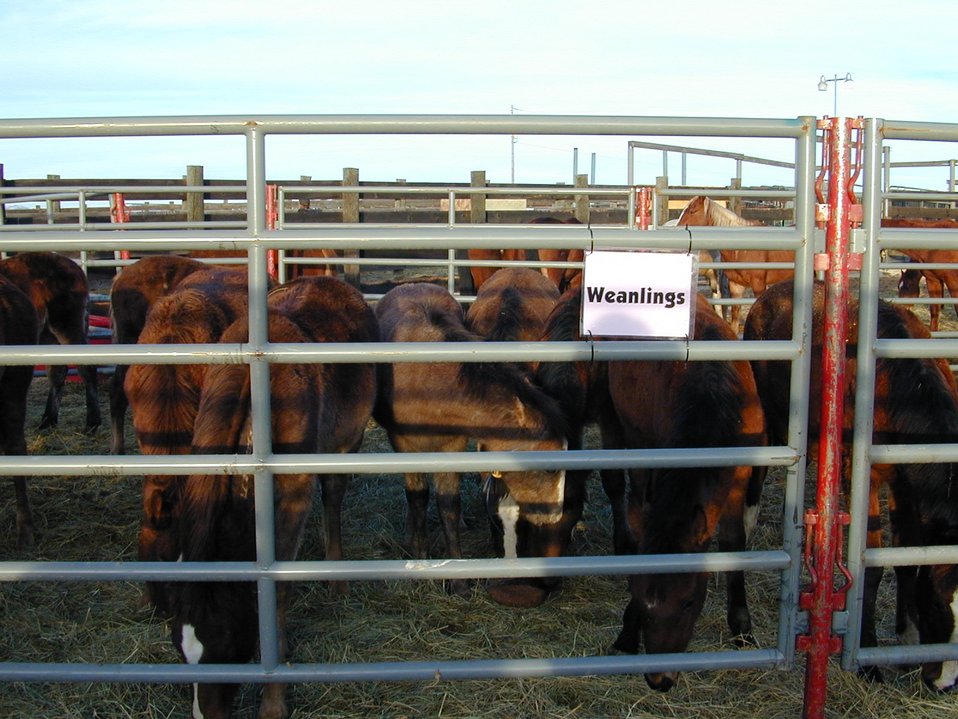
Wild Horse and Burro Adoption